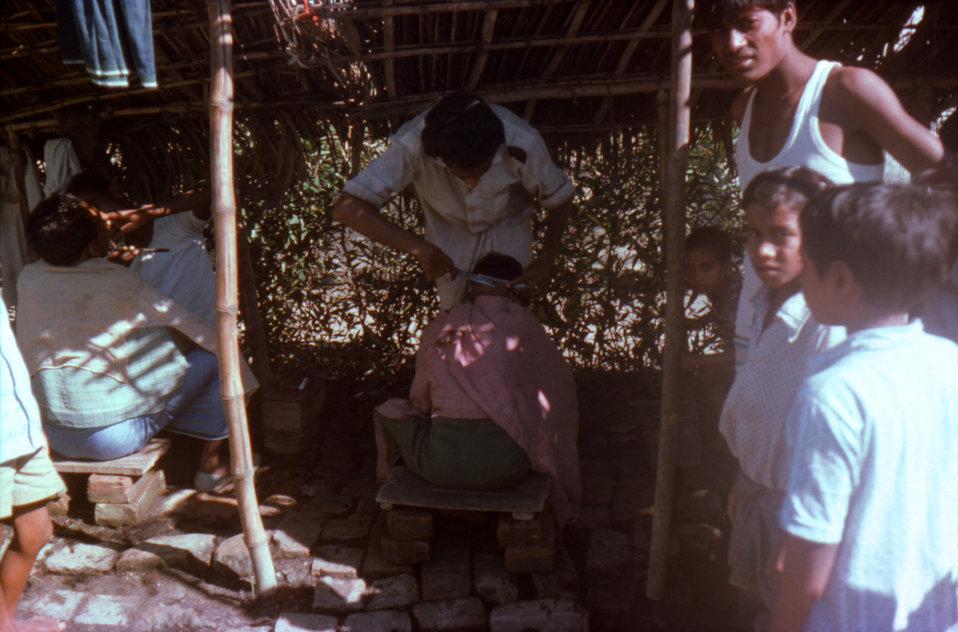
This October, 1975 image depicted a number of Bangladeshi villagers, as they were gathered at a Patuakhali Town open-air barber shop, in the Patuakhali District of South-western Bangladesh.